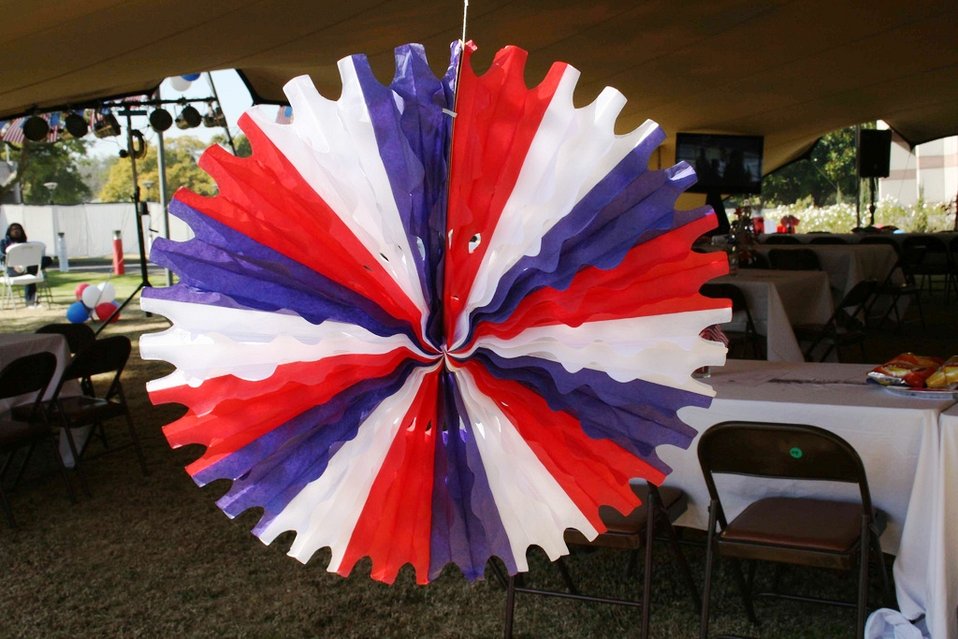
A Red, White, and Blue Decoration Hangs From the Tent

Red, white, and blue decorations were on display at the Team USA pep rally before the U.S. vs. Algeria World Cup match on June 23, 2010, in Pretoria, South Africa.